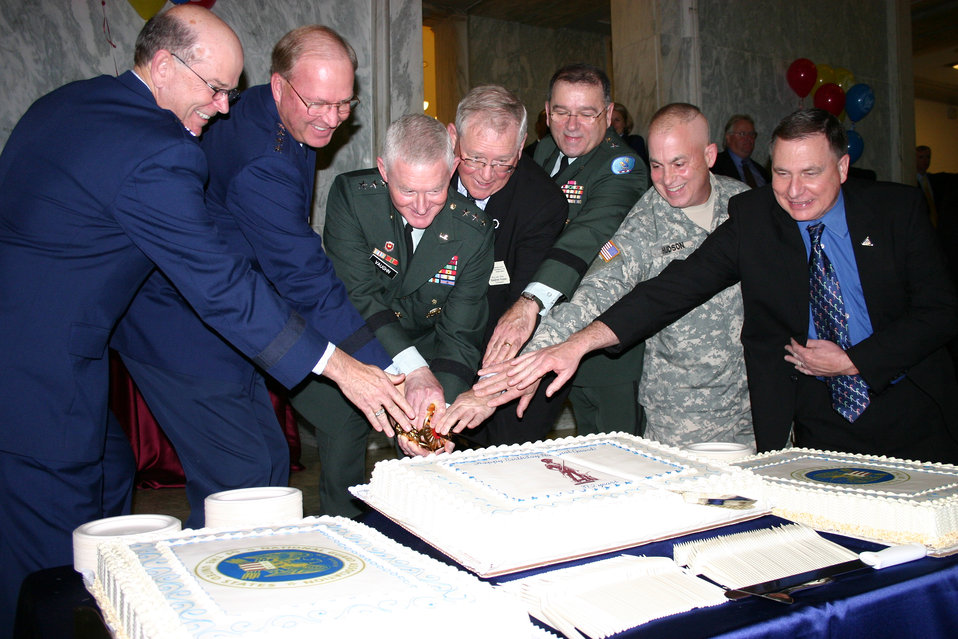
National Guard celebrates 372nd birthday

Maj. Gen. Emmett R. Titshaw Jr., Gen. Craig R. McKinley, Army Lt. Gen. Clyde A. Vaughn, retired Brig. Gen. Stephen M. Koper, Army Maj. Gen. Francis D. Vavala, Army Command Sgt. Maj. David Hudson and retired Army Sgt. Major Frank Yoakum cut a cake to celebrate the 372nd birthday of the National Guard Dec. 10 at the Rayburn House Office Building in Washington, D.C. General Titshaw is the acting director of the Air National Guard. General McKinley is the chief of the National Guard Bureau. General Vaughn is the director of the Army National Guard. General Koper is the president of the National Guard Association of the United States. General Vavala is the Delaware adjutant general and president of the Adjutants General Association of the United States. Command Sgt. Maj. Hudson is the senior enlisted adviser to the NGB chief; and Sgt. Maj. Yoakum is the legislative director of the Enlisted Association of the National Guard of the United States.